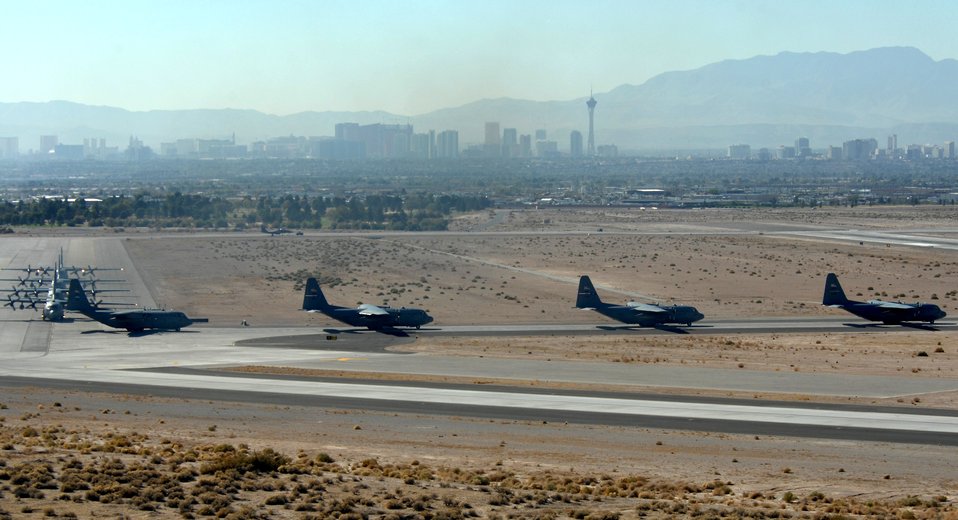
Wrapping up for the day

C-130 Hercules aircraft head for the parking ramp at Nellis Air Force Base Nev., Nov. 20 after completing airdrop missions during a mobility exercise over the Keno Range in Nevada.